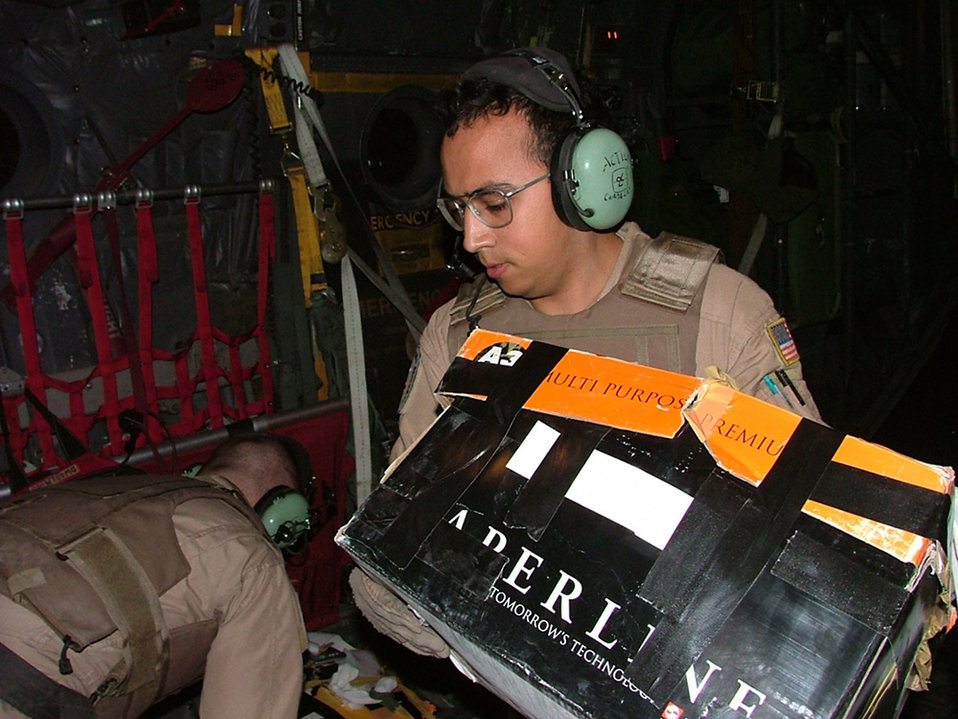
Airmen drop 80,000 leaflets over Afghanistan

Airman 1st Class David Cardenas positions a box of leaflets to be dropped over Afghanistan May 21 in Southwest Asia. Airman Cardenas dropped more than 80,000 leaflets over Afghanistan in support of Operation Enduring Freedom. Airman Cardenas is assigned to the 746th Expeditionary Airlift Squadron. One side of the 6-by-4 inch leaflets urged the Taliban to give up by stating,